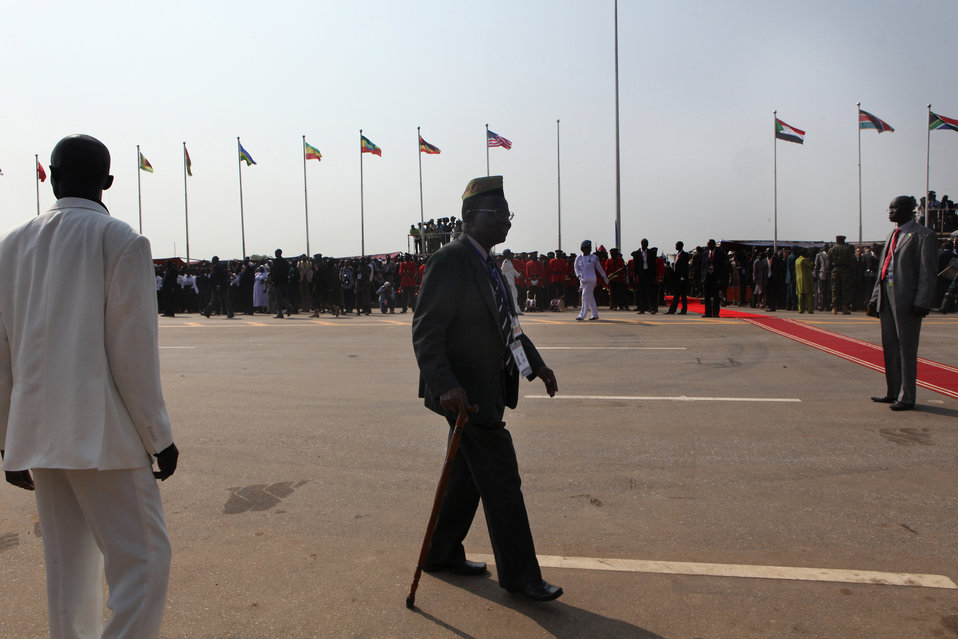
South Sudan Independence Day

Dr. Joseph Lagu, one of the founding fathers of the independence struggle along with the late Dr. John Garang Mabior, arrives to the Garang Mausoleum site in Juba, South Sudan on July 9, 2011.